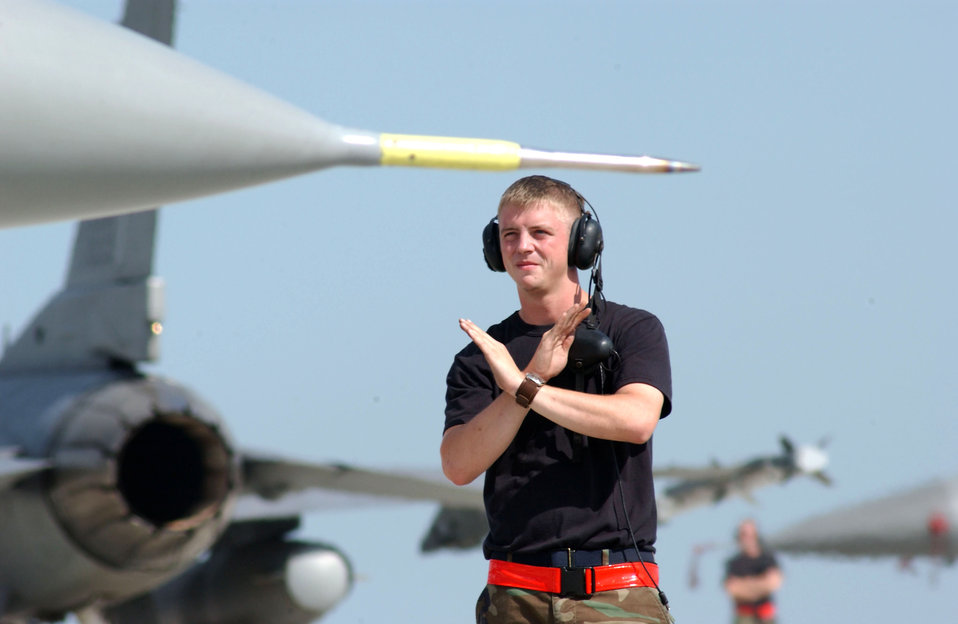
Viper Lance 2006

Senior Airman Steven Weidman marshals an F-16 Fighting Falcon before its first mission against the Romanian Air Force's MiG 21 Lancers at Exercise Viper Lance 2006 at Mihail Kogalniceanu Air Base, Romania, on Aug. 9. This is the first time F-16 crews have trained in Romania. Airman Weidman is a crew chief with the 22nd Expeditionary Fighter Squadron. The F-16 is from Spangdahlem Air Base, Germany.